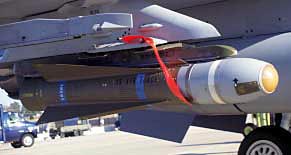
AGM-65 Maverick

FILE PHOTO -- An AGM-65 Maverick is mounted on an F-16 Fighting Falcon. The Maverick is a tactical, air-to-surface guided missile designed for close air support, interdiction and defense suppression missions.